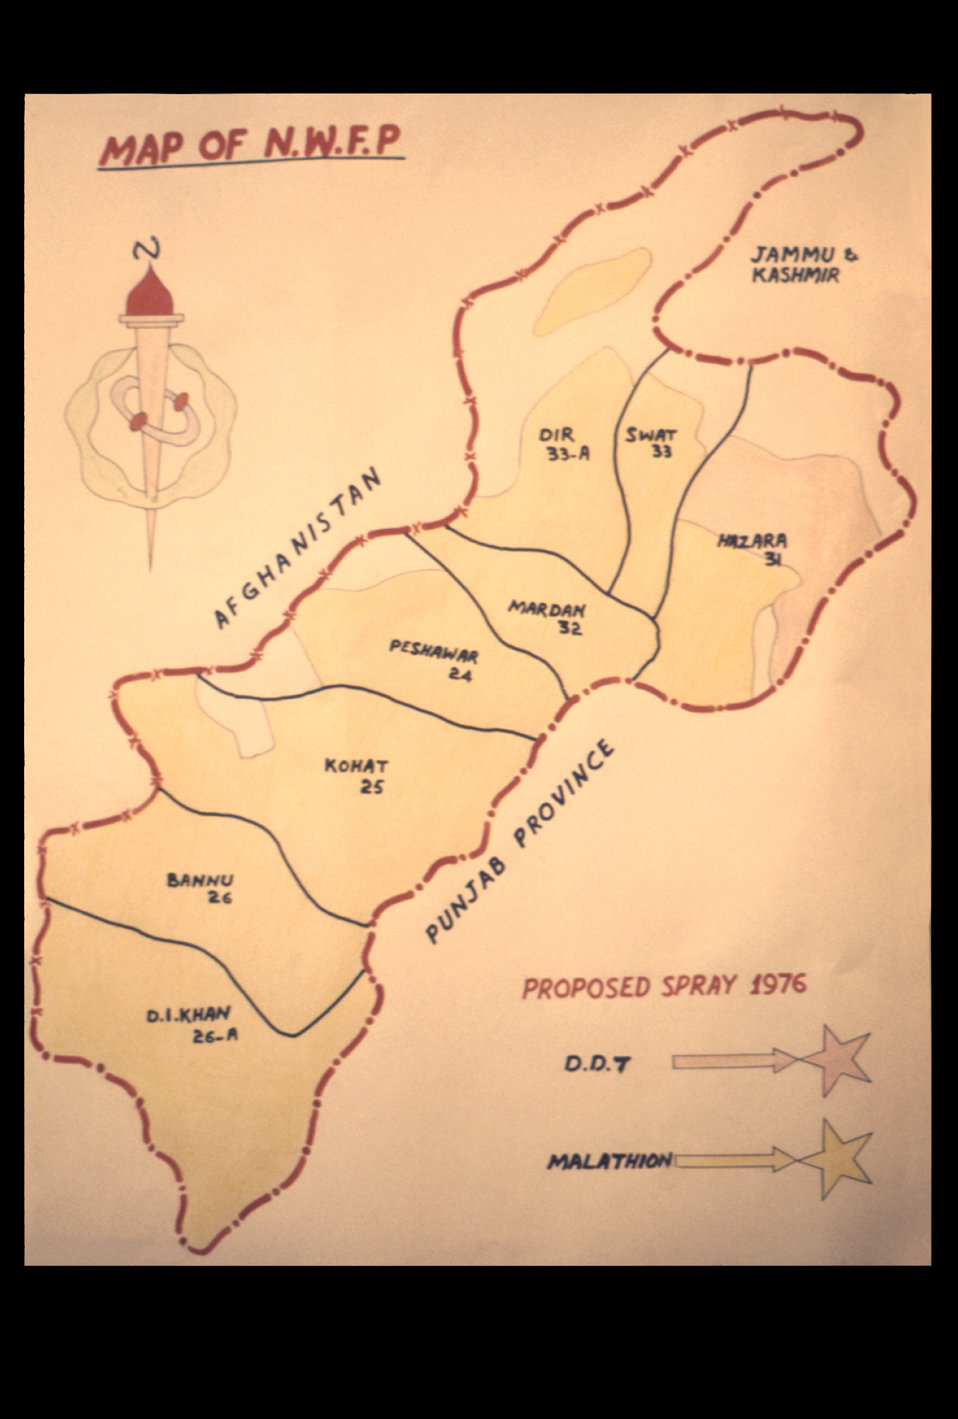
This map shows the area sprayed in the 1976 Pakistani malathion campaign in order to curb the country's mosquito population.